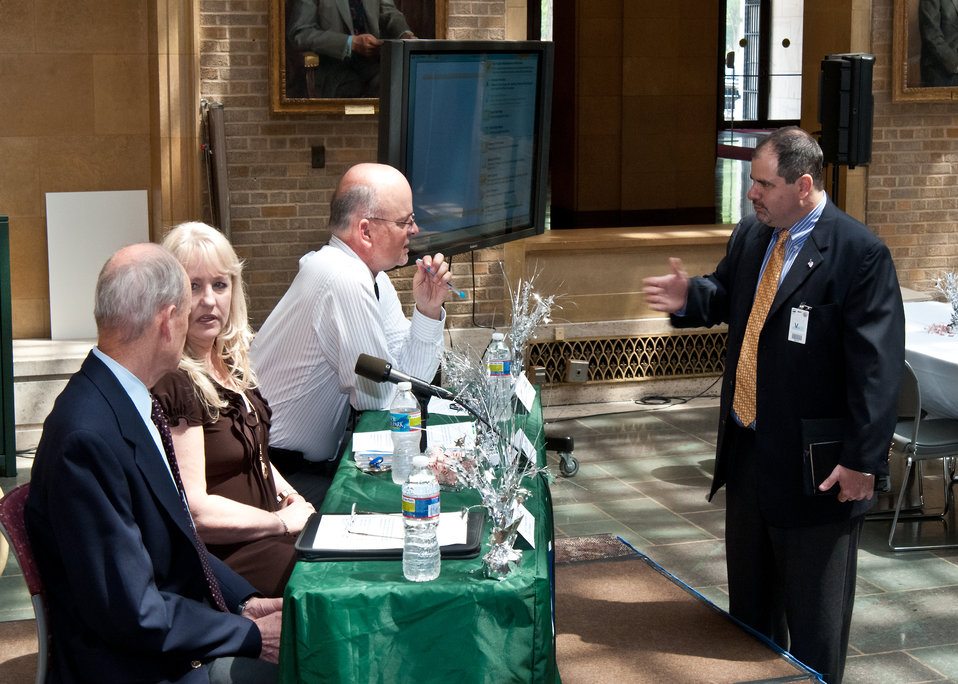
From left: Panel members Morris Tate, Director for Business Services, Office of Operations, Debra Arnold, Rural Development and President, AFSCME Union Local 3870 (USDA), Owen Unangst, Director, Innovations and Emerging Technologies, Office of the Chief Information Officer and Josh Sawislak, Senior Fellow Telework Exchange discuss their topics prior to a “Telework Program Party/Brown Bag” event on the patio of the Jamie Whitten Building of United States Department of Agriculture, in Washington, DC, on Tuesday, June 7, 2011. The event included an interactive telework panel and exhibits from the field of telework, telecommuting and mobile work environments. The event was open to all USDA employees, supervisors, managers, human resources staff and USDA telework program coordinators.